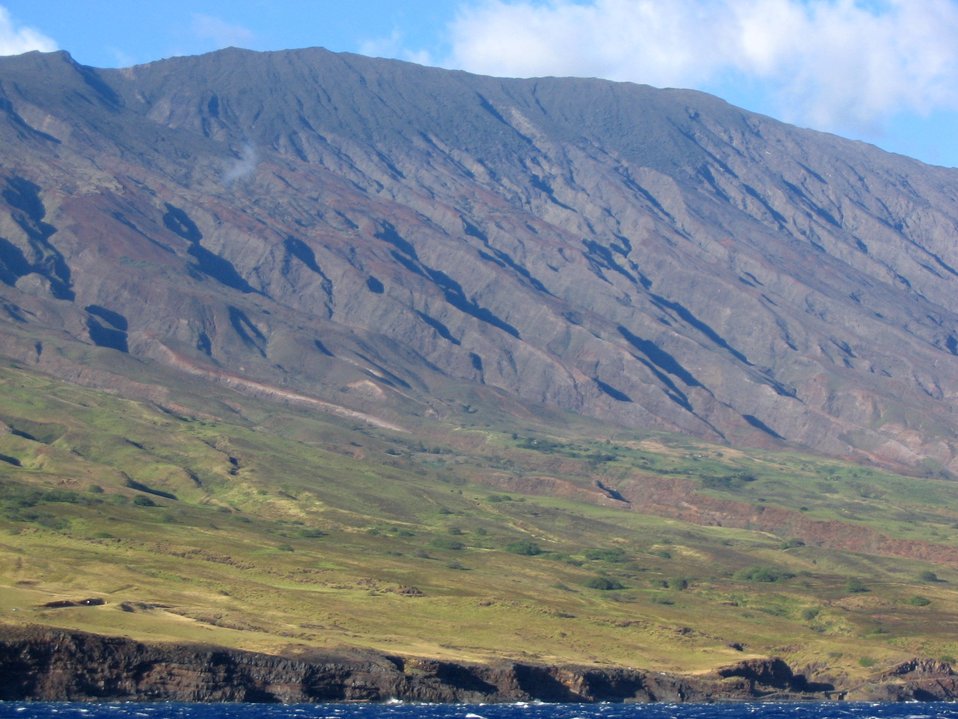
Coast of southern Maui.